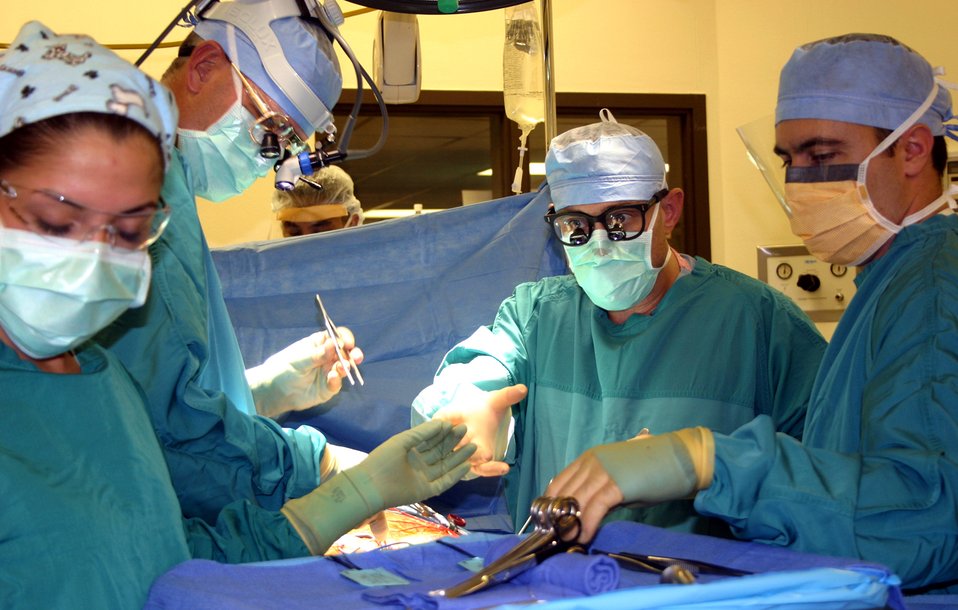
Medical centers integrate surgery missions

Airman Yesenia Arellano, Lt. Col. (Dr.) Tracey Jones and Lt. Col. (Dr.) Darrin Clouse, and Capt. (Dr.) Robert McGill perform an arterial bypass for a clot in the artery around the heart Oct. 6 at Wilford Hall Medical Center at Lackland Air Force Base, Texas. Airman Arellano is a surgical technician, Colonels Jones and Clouse are vascular surgeons, and Captain McGill is a surgical intern on a Wilford Hall Medical Center vascular surgical team.